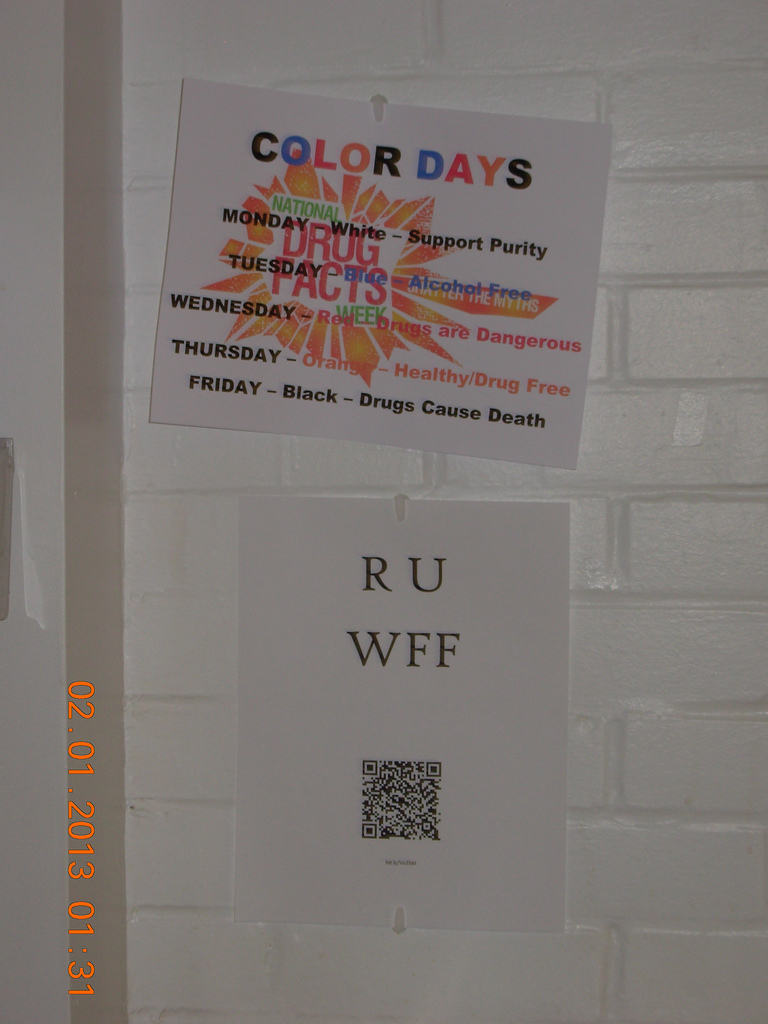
Iowa's SAFE Coalition, NDFW 2013

Van Buren County, IA. SAFE Coalition high school student run groups fighting issues of drug, alcohol, and tobacco abuse during NDFW 2013.